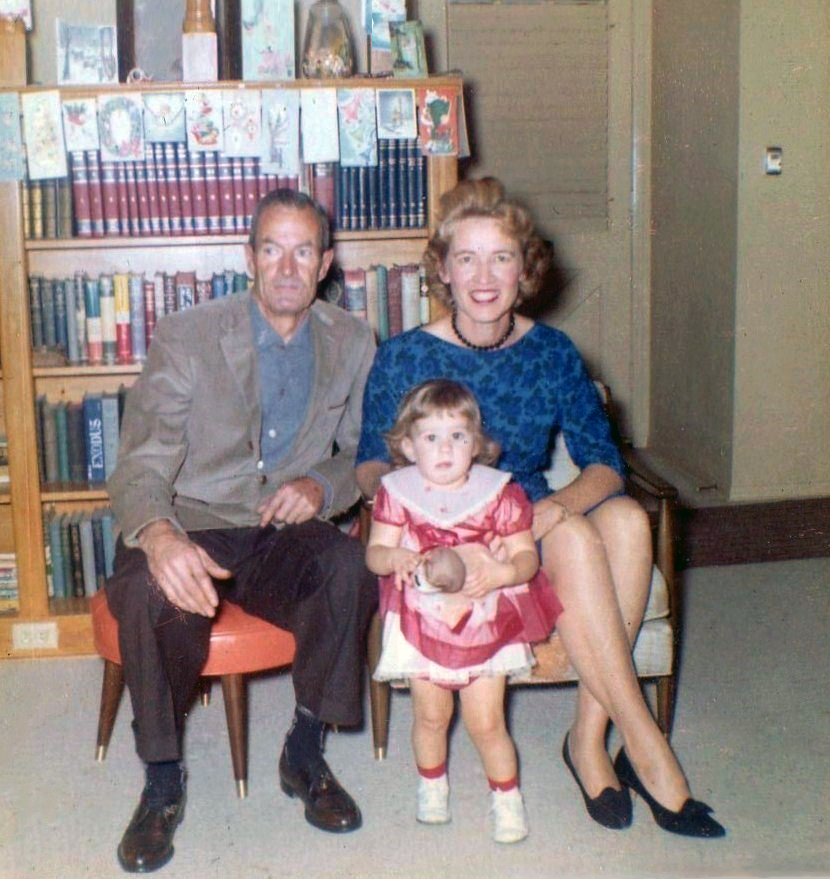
Family photo in California taken in 1959